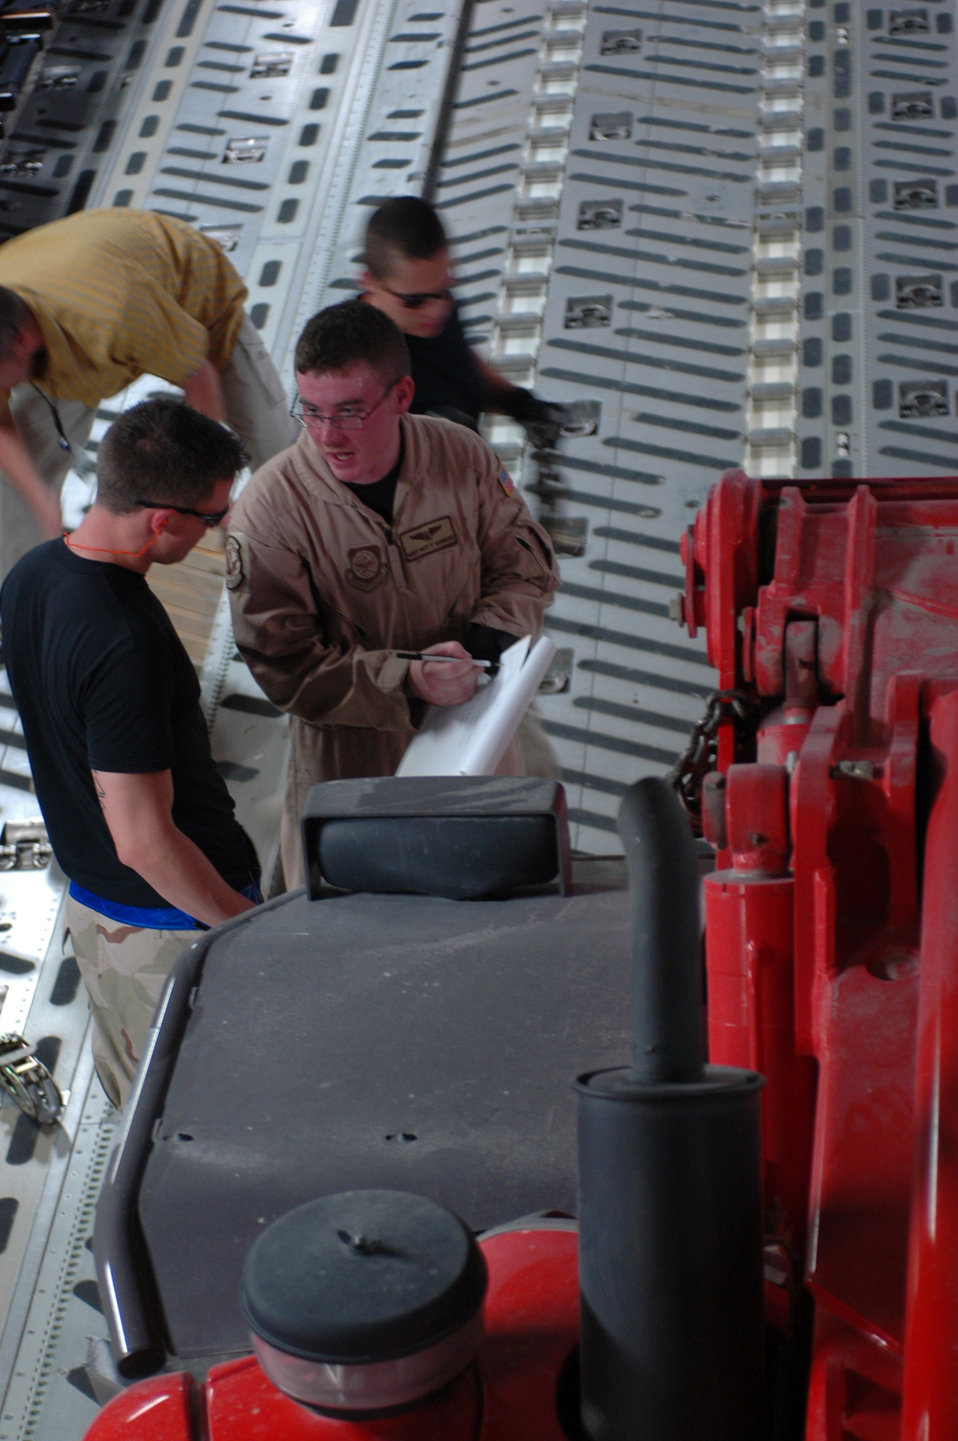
Delivering Bombs, Beans, Bullets

Staff Sgt. Matt Shields, 816th Expeditionary Airlift Squadron loadmaster (center), works with 8th Expeditionary Air Mobility Squadron personnel to configure the floorplan on a C-17 Globemaster for a mission April 25.